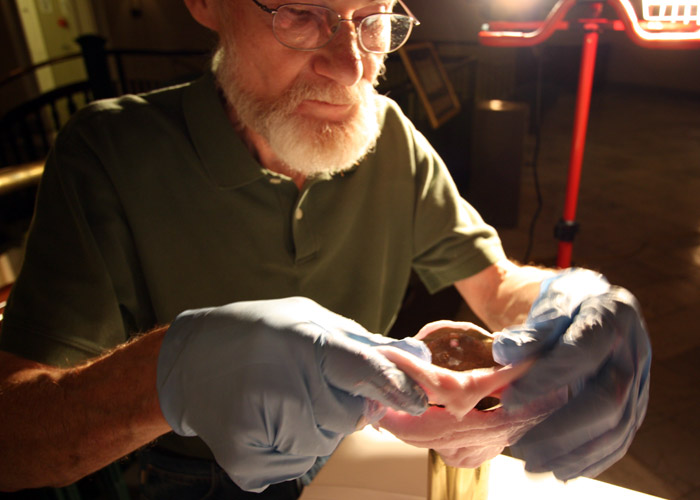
Historic Restoration of the Treasury Stairwells

The stairwell railing is a combination of a carved wood railing and a second brass railing feature. A component of the brass mailing is wrapped in a flexible molding material to serve as a model for casting missing pieces.